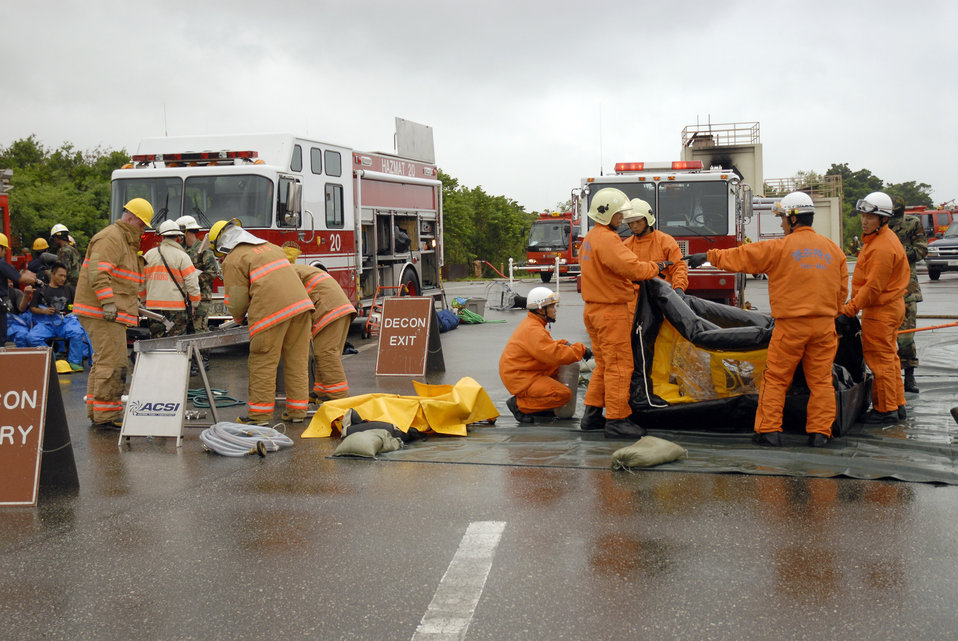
Joint emergency response training

Firefighters from 18th Civil Engineer Squadron and Nirai Fire Department build a decontamination entry site during joint training at Kadena Air Base, Japan, on July 14. The Nirai Fire Department covers Kadena-Town and Yomitan-Village, which surround the base. The training helps the organizations understand each other's capabilities when responding to an off-base incident.